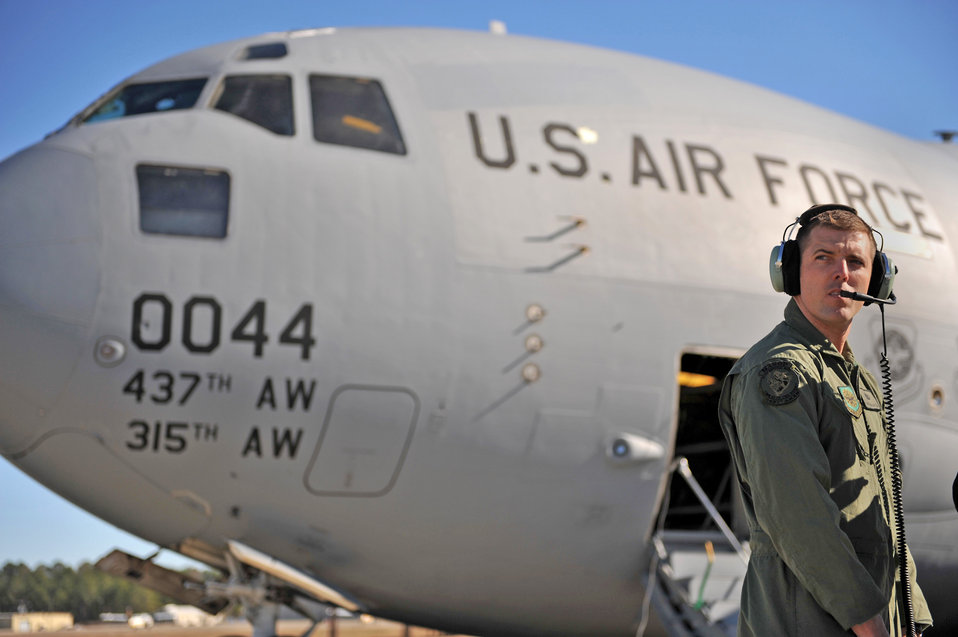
Operation Unified Response

Tech. Sgt. Chad Buttler conducts a preflight check on a C-17 Globemaster III Jan. 18, 2010, at Pope Air Force Base, N.C., before taking off for a humanitarian mission to Haiti. The C-17 and crew conducted the first humanitarian air delivery mission over Haiti to test the feasibility of future missions in speeding along the flow of supplies into the country. Sergeant Butler is a flying crew chief from the 437th Aircraft Maintenance Squadron at Charleston Air Force Base, S.C.